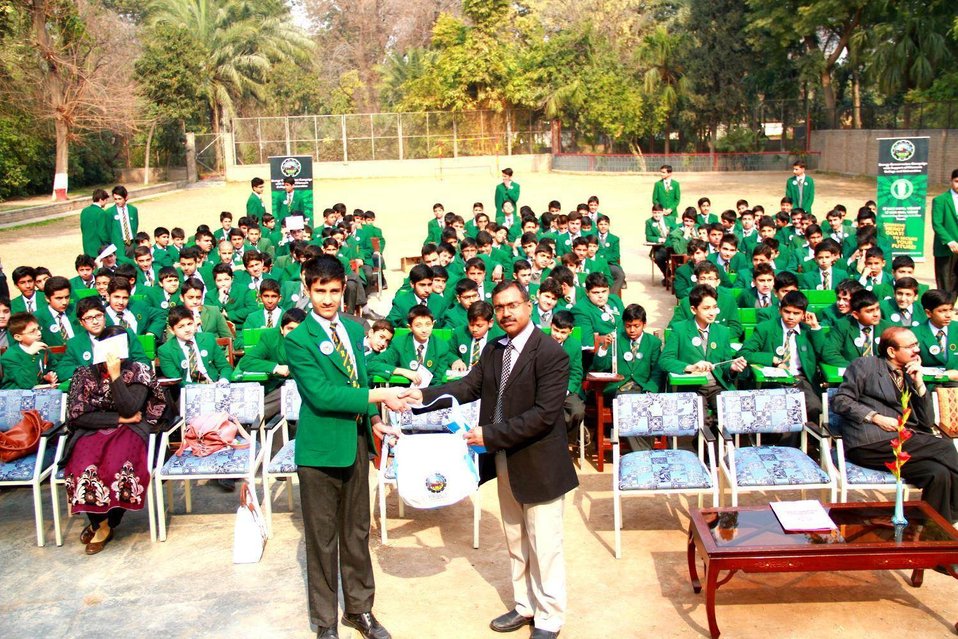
Above) Energy Conservation Campaign at Peshawar Electric Supply Company

“I am an eighth grade student and just want to say that the session held at our school today was very informative. I learned a lot of things like how to save electricity using energy savers, how many distribution companies there are, how electricity is produced, what role we as students play in conserving electricity for the nation. I really enjoyed the quiz session where the PESCO team asked questions and distributed prizes. I hope they come back to our school again.”
Edwards College School, Peshawar Student
Shahzaib Khan

(Picture Above) Energy Conservation Campaign at Peshawar Electric Supply Company: PESCO in collaboration with the USAID Power Distribution Program rolled out the highly significant 'Energy Conservation Drive' in different schools and colleges of Peshawar. The second phase of this activity was carried out in Edwards College School of Peshawar which was eagerly attended by approximately 5,000 students and teachers. The students described these sessions as being among the best events arranged at their college. Building mass awareness on energy conservation ensures that each student participating in the session will inform his / her parents, siblings and friends about the measures discussed.